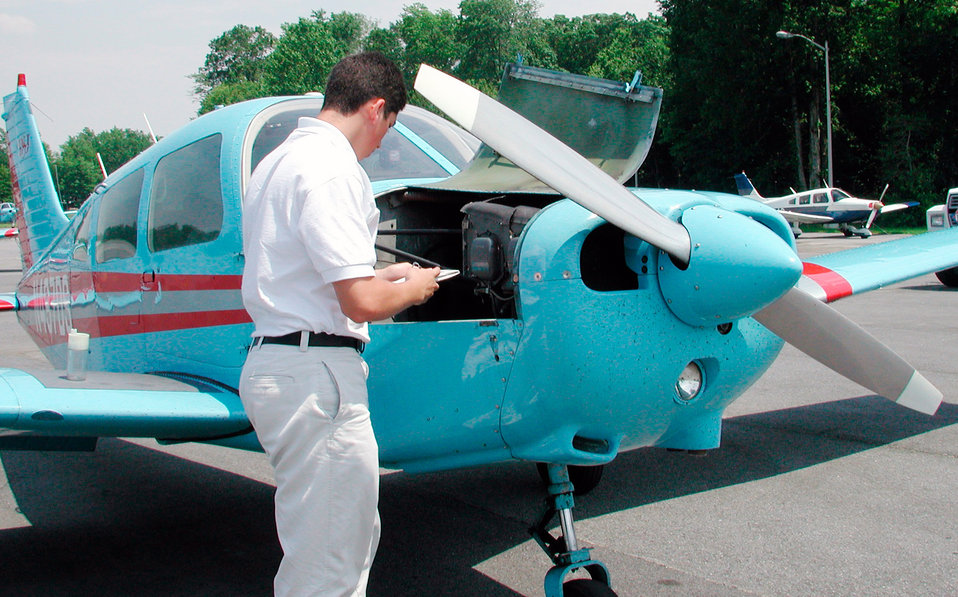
Summer school

DOVER AIR FORCE BASE, Del. -- Manuel R. Ochoa inspects a Piper Warrior during Flight Awareness Summer Training here recently. He is an Air Force ROTC cadet from New Mexico State University.